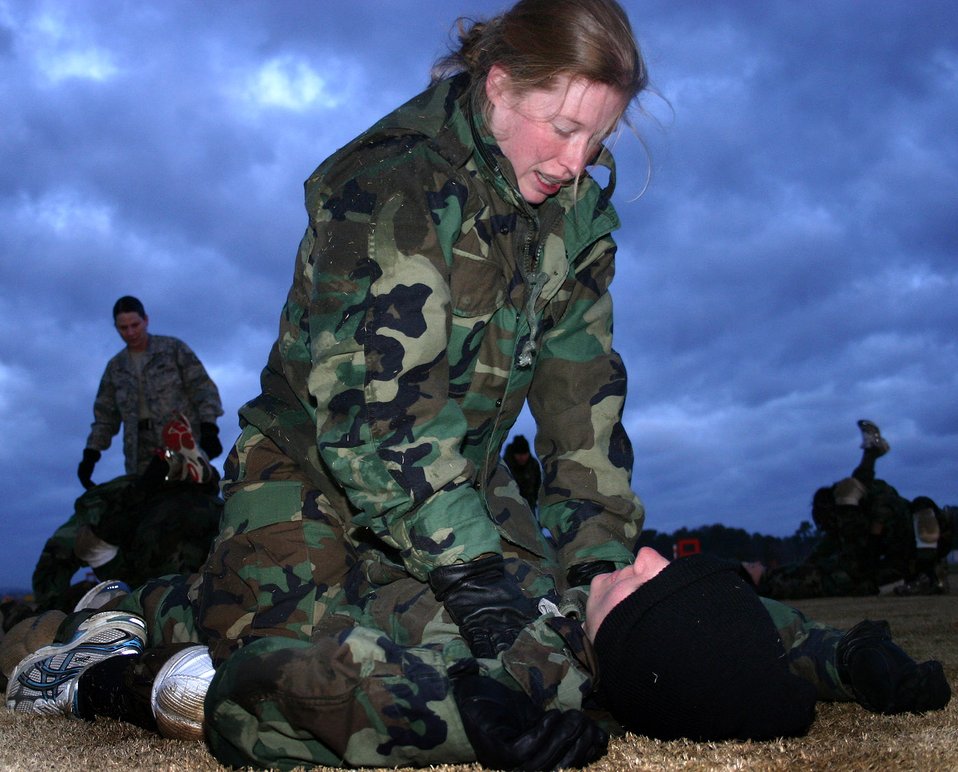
OTS starts unarmed combat training

Officer Training School basic trainees Amy Natalini and Lori Granger practice self-defense techniques during the school's first Air Force Combative Program training course Jan. 29 at Maxwell Air Force Base, Ala. More than 70 hours of expeditionary skills training is now being taught at the school. The first module focuses on ground fighting and basic jujitsu-style grappling moves while the second and third modules are specialized courses for certain career fields such as tactical air controllers and combat controllers.